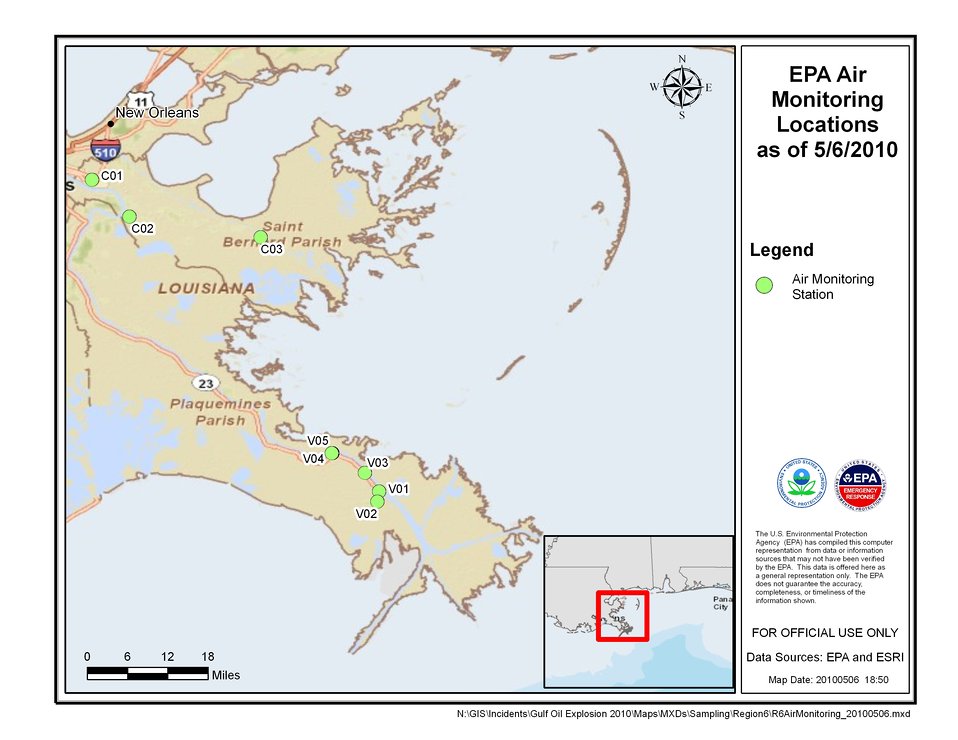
EPA Air Monitoring Locations May 5, 2010